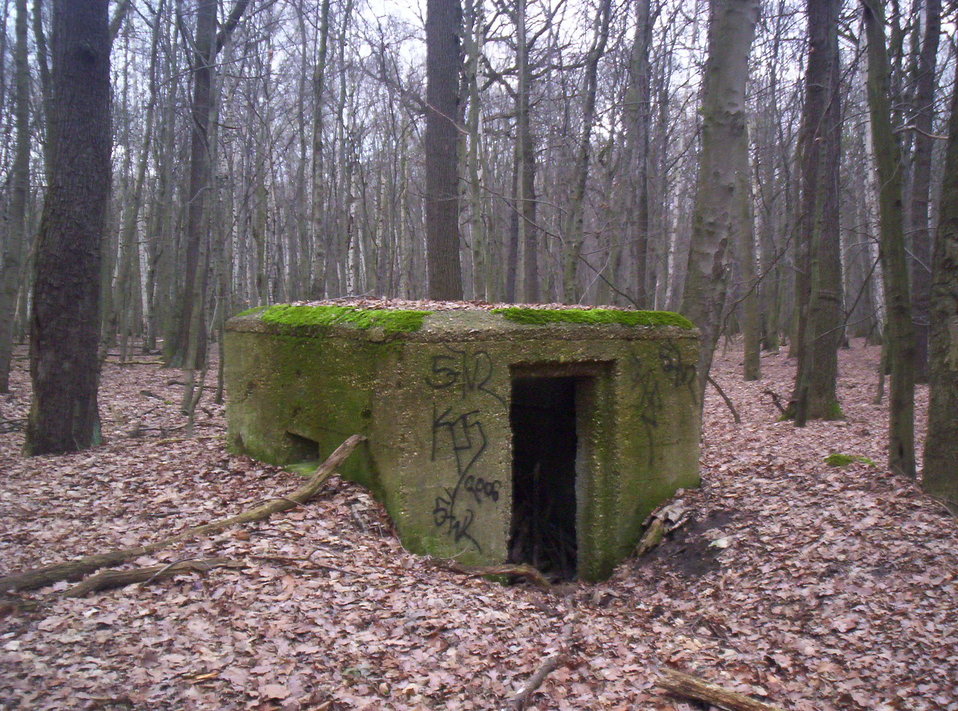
Deutsch: Munitionsbunker (?) im „Tannenwald“ bei Leipzig (Sachsen)